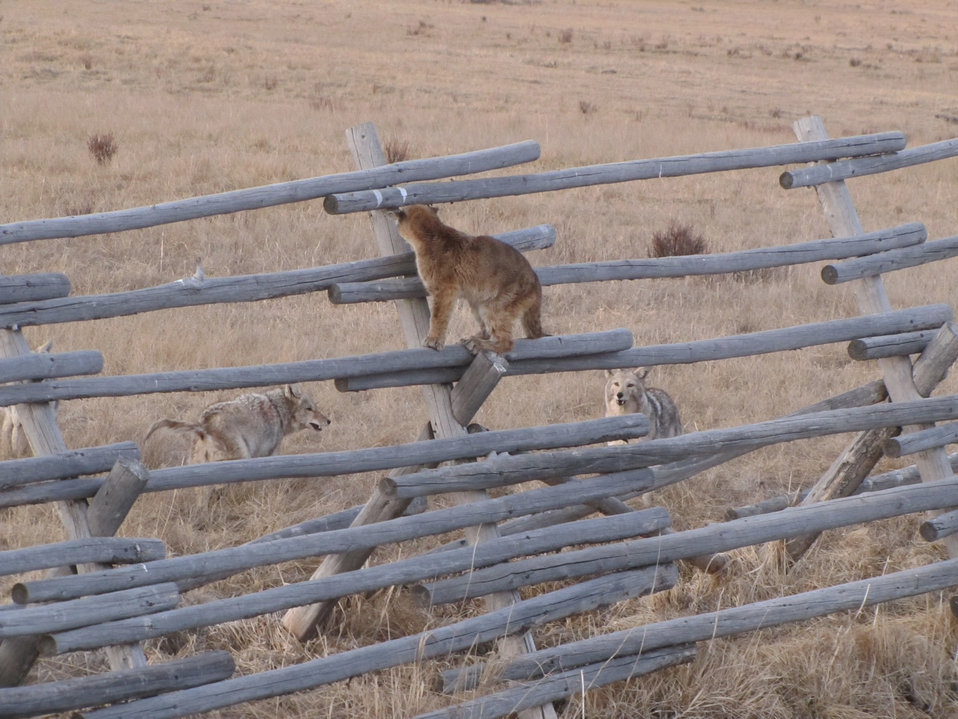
Feeling Unwelcome

One in a series of seven photos:

The National Elk Refuge's Outdoor Recreation Planner witnessed a spectacular standoff between two juvenile mountain lions and five coyotes. The coyotes let the cats know they weren’t welcome in the area. The mountain lions sought safety on a buck and rail fence for over an hour while the coyotes lurked in the background.

The coyotes become more aggressive as one of the mountain lions moves down the fenceline.

Credit: Lori Iverson / USFWS

This photo series has gone viral! Join the discussion on our Facebook page: www.facebook.com/photo.php?fbid=595246397154972&set=a...